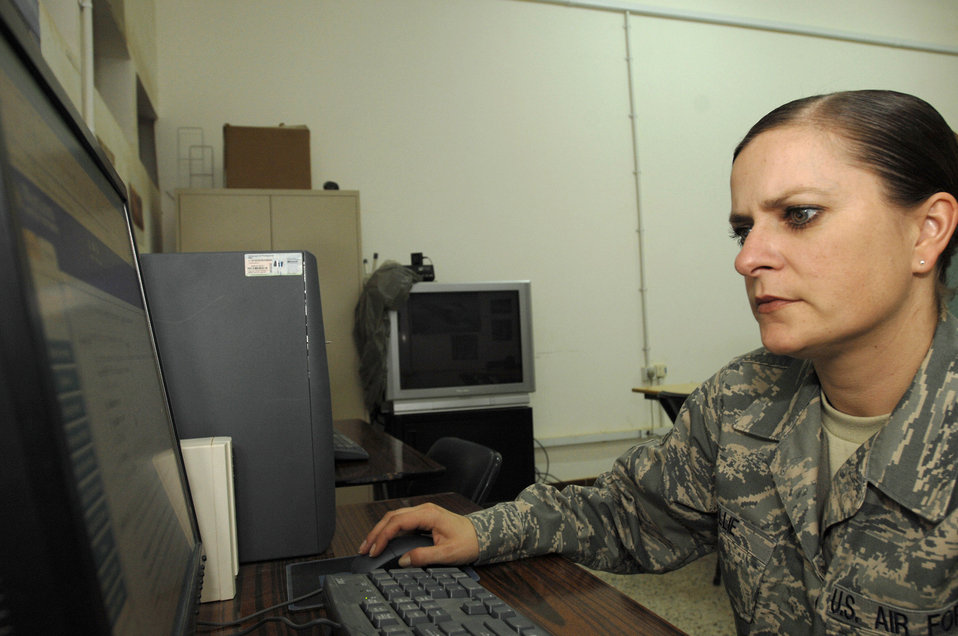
Education opportunities open doors for deployed members

Tech. Sgt. Corine Collie finishes an online test through a distant learning course Jan. 3 at Ali Base, Iraq. The 407th Expeditionary Services Squadron Education Center gives servicemembers the opportunity to further their education and career development. Sergeant Collie is assigned to the 407th Air Expeditionary Group Finance Office and is deployed from Eielson Air Force Base, Alaska.